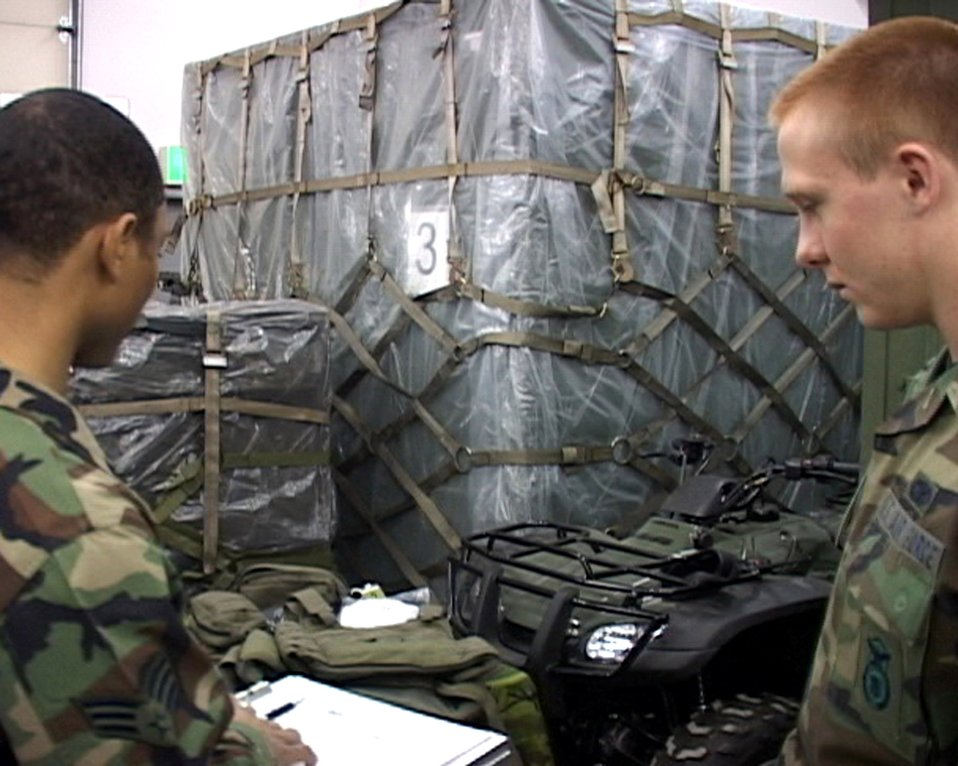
Young Airman prepares for his first deployment

Airman Samuel Martinek inspects a pallet as he prepares for his upcoming deployment. Airman Martinek is assgined to the 35th Security Forces Squadron at Misawa Air Base, Japan.